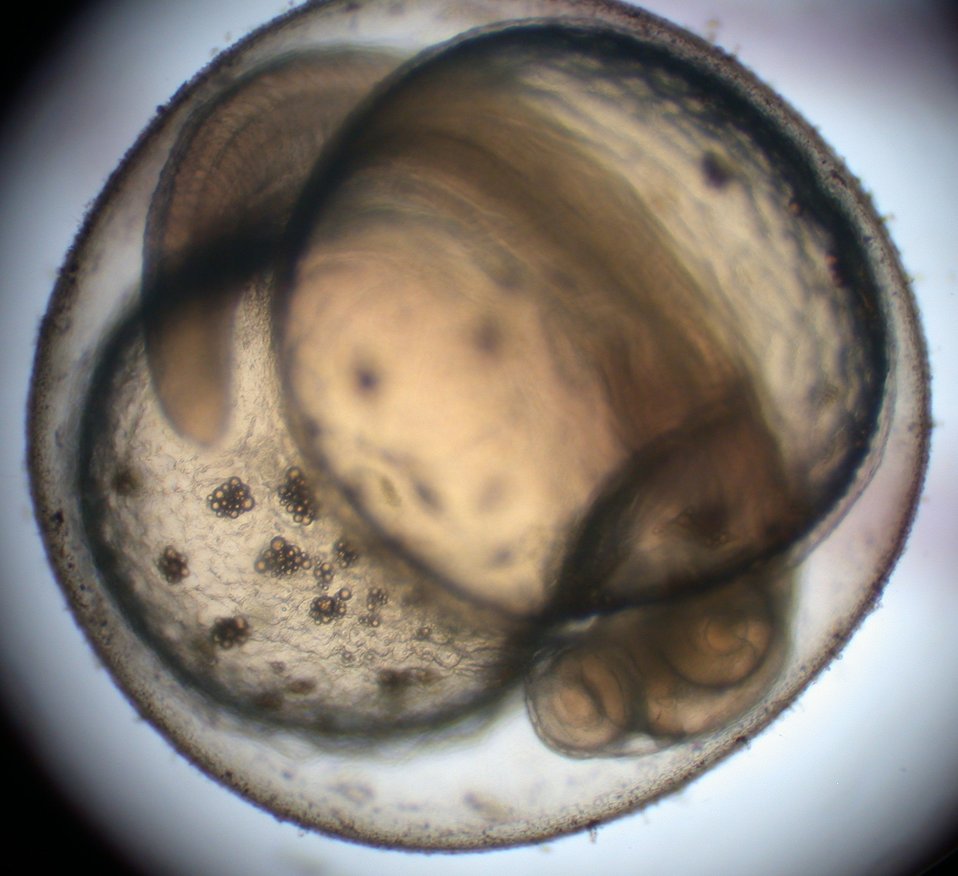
Northern Pike Egg

The larval stage of the dominant predator of the North. The eyes of this northern pike are visible with its body wrapped around the yolk sac.

Location: Garrison Dam NFH

Photo Credit: Rob Holm / USFWS

Photo Contest Entry #121